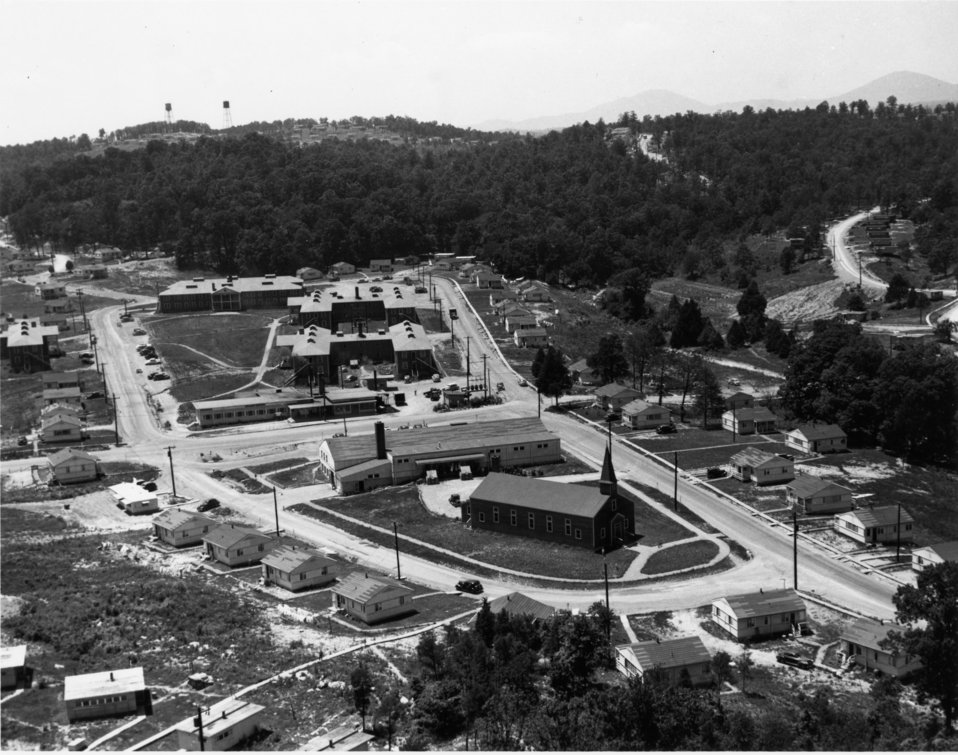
Aerial of Oak Ridge